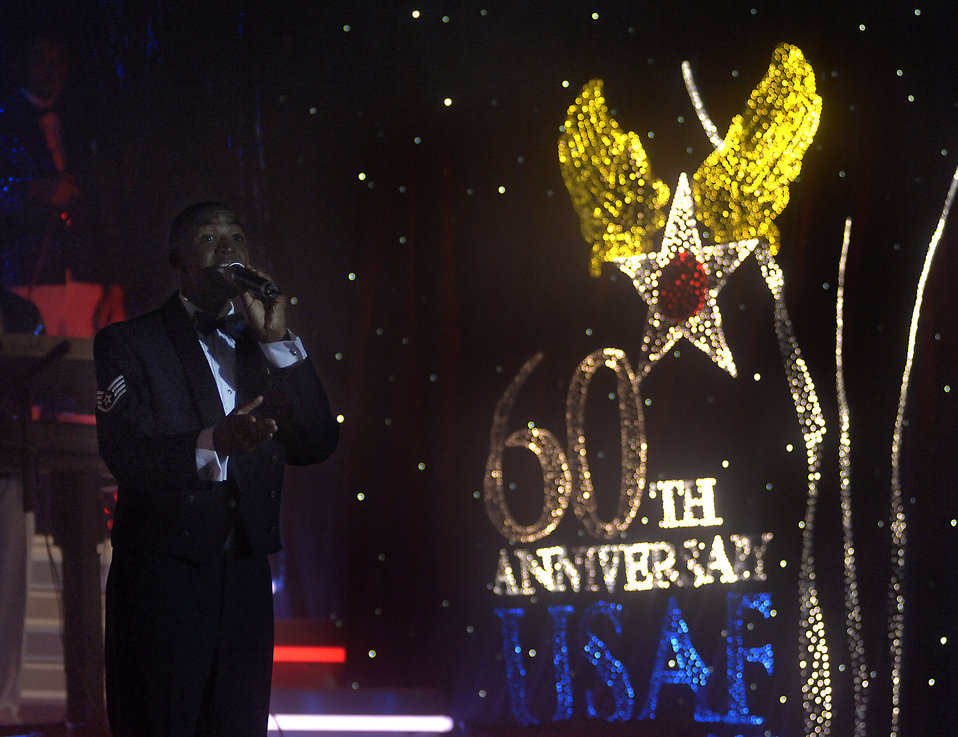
Tops in Blue entertains at Air Force Week

Staff Sgt. Keith Loudermill with Tops in Blue performs as part of Air Force Week June 5 at the Radisson Hotel Sacramento, Calif. Tops in Blue is the Air Force's premier entertainment group that performs for audiences around the globe.